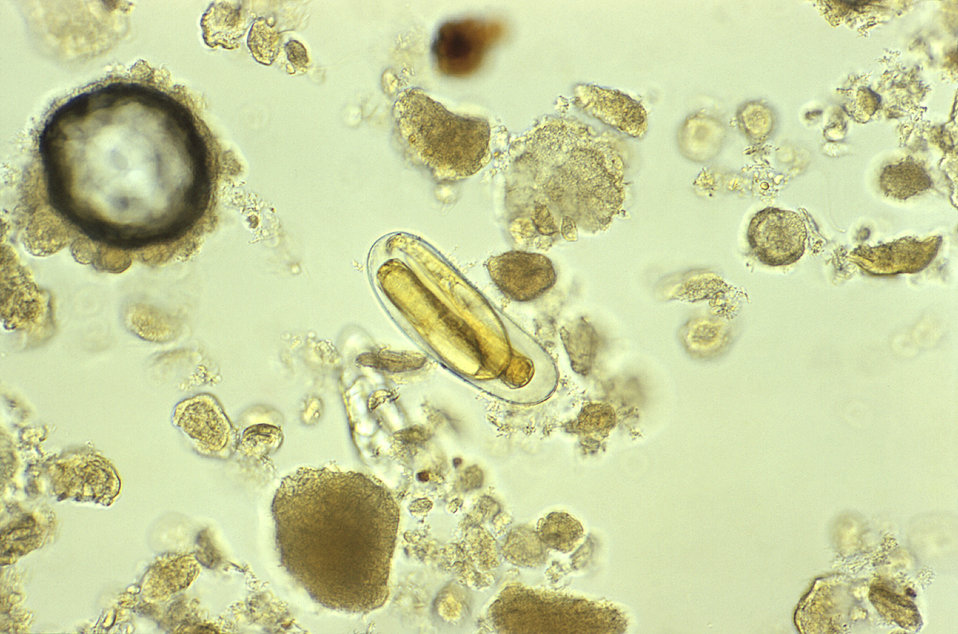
Magnified 240X, this photomicrograph revealed the presence of a Heterodera sp. nematode egg.